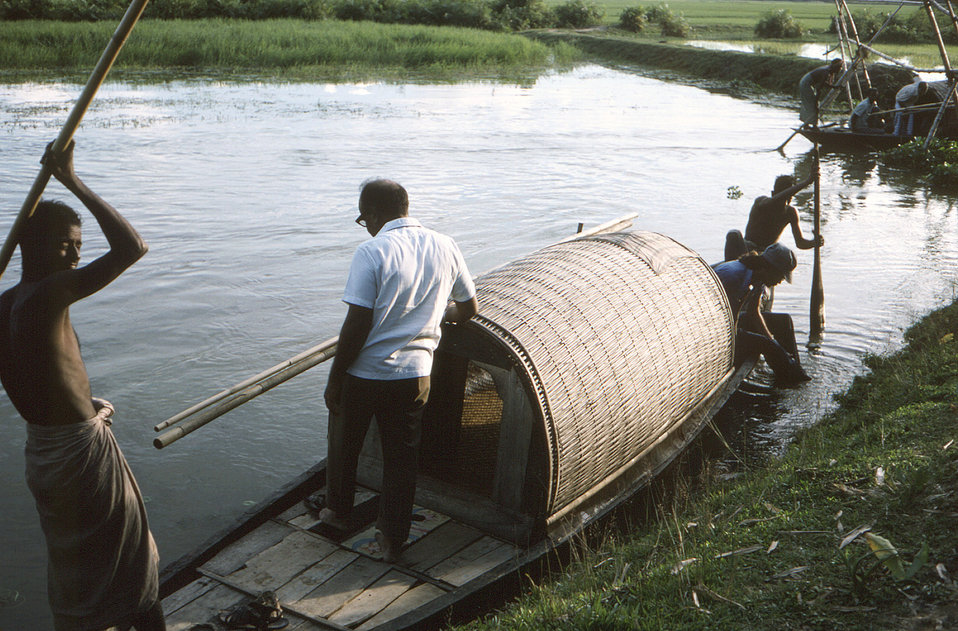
This 1975 photograph was captured during the smallpox eradication efforts, which in this case, were underway in the north-eastern Bangladesh District of Sylhet. Boarding a riverboat, this public health practitioner was on his way to what had been labeled, 'The High Commission Outbreak' in that region.